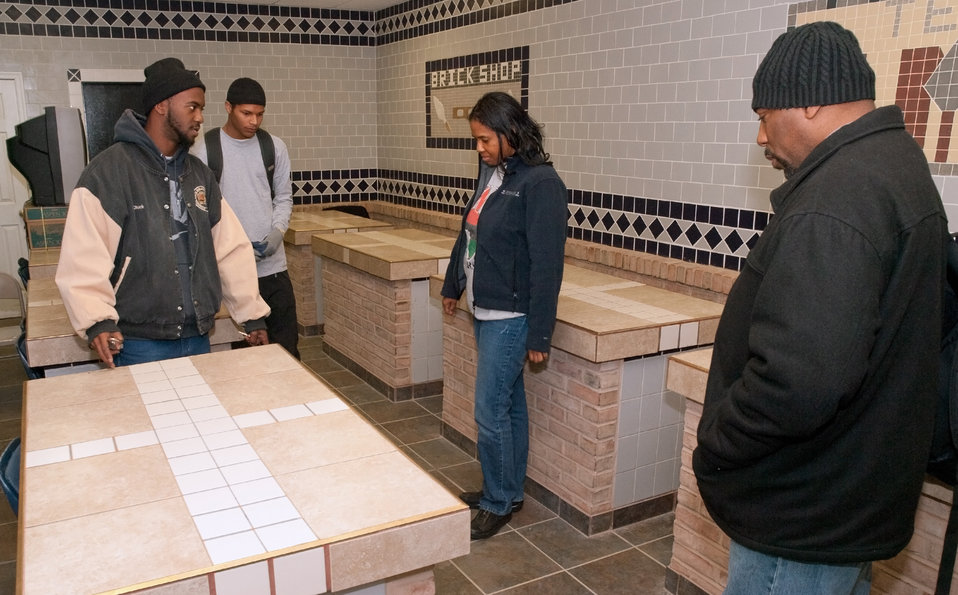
Student Carlton Peters shows visitors some of the work his classes have created at the Job Civilian Conservation Corp Center (JCCCC) in Harpers Ferry, WV on Nov. 8, 2012. The U.S. Forest Service manages 28 Job Corps Civilian Conservation Centers.